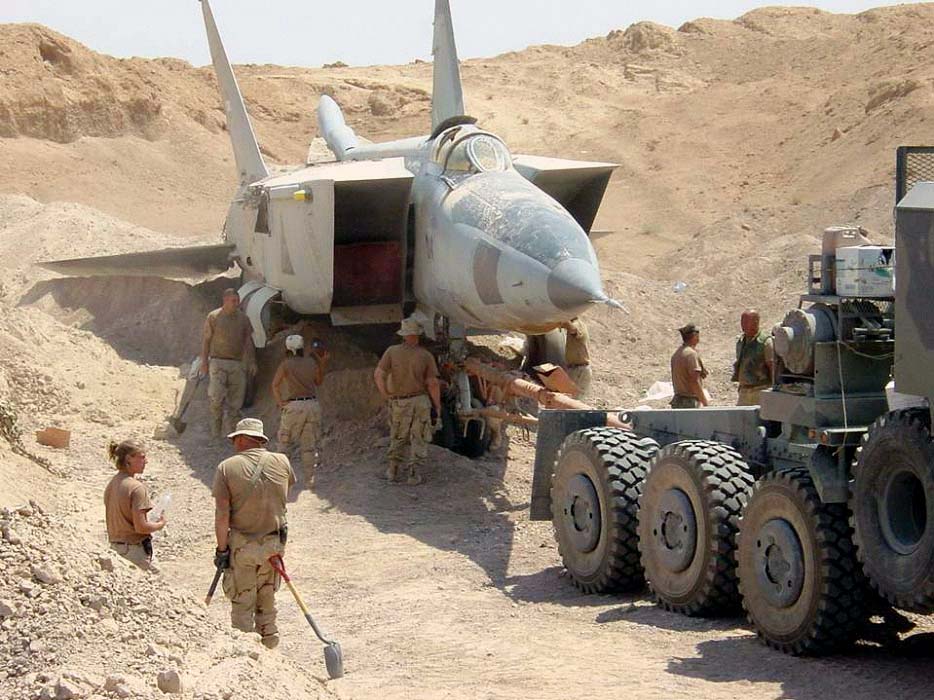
Hidden Foxbat

OPERATION IRAQI FREEDOM -- A search team discovers a MiG-25 Foxbat buried beneath the sands in Iraq. Several MiG-25 interceptors and Su-25 ground attack jets have been found buried at Al-Taqqadum air field west of Baghdad.